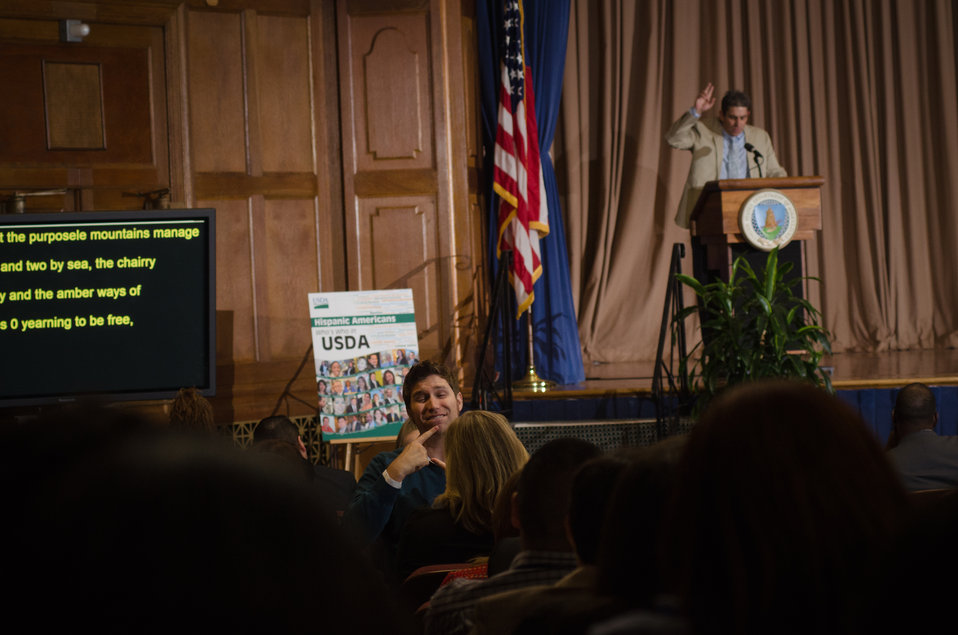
Keynote Speaker Poet Richard Blanco talks about differences in culture, language, and his childhood,at the 2013 National Hispanic Heritage Month ”Hispanics: Serving and Leading our Nation with Pride and Honor,” on Thursday, Sept. 19, 2013, in the Jefferson Auditorium, USDA Headquarters, Washington, D.C. Mr. Blanco stands as the youngest, first Latino, and first openly gay person to serve as the Presidential inaugural poet, on January 21 of this year.